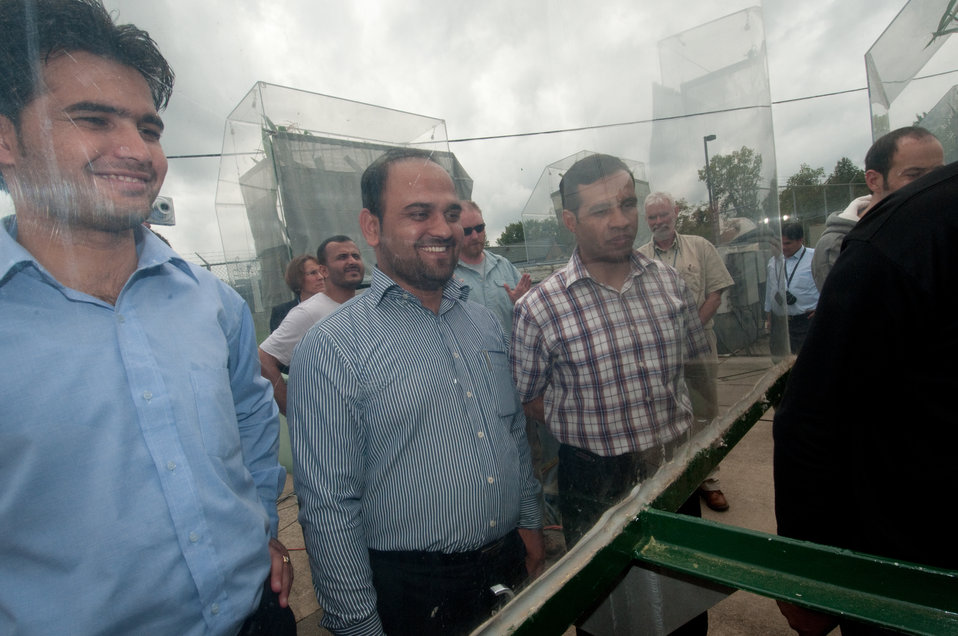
Borlaug Fellows from Afghanistan’s Ministry of Agriculture, Irrigation and Livestock (MAIL) get an inside and close-up view of the U.S. Department of Agriculture (USDA), Agriculture Research Service's (ARS) Global Climate Change Lab's and the Soil Plant Atmosphere Research (SPAR) units in Beltsville, MD, on Wednesday, September 21, 2011. SPAR units provide precise control of the major environmental variables influencing crop growth including temperature, humidity, and atmospheric carbon dioxide concentration. The SPAR units are fully automated to measure crop canopy gas exchange including photosynthesis, respiration, transpiration and water use efficiency.